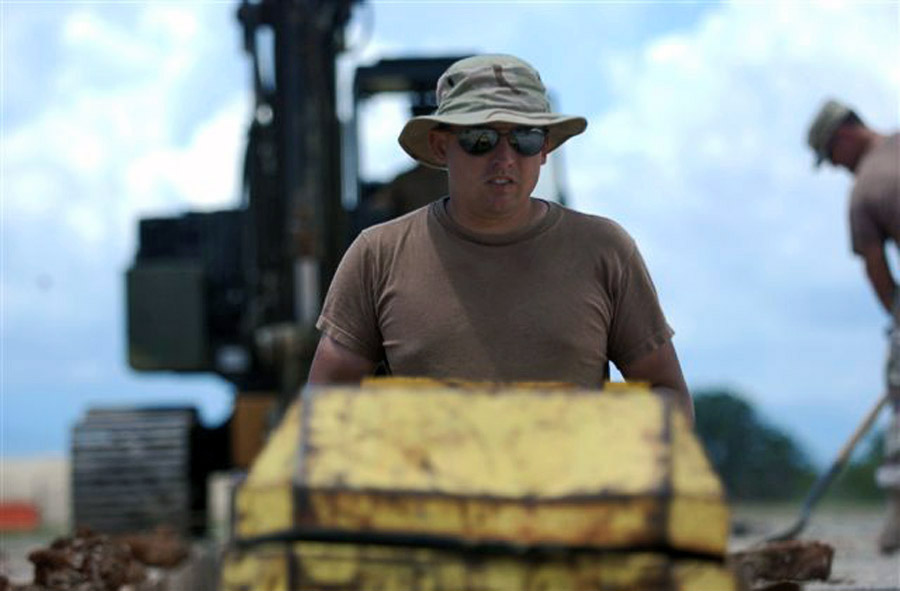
Prime BEEF stamps hoof prints on Gitmo

Airmen from the 474th Expeditionary Civil Engineer Squadron work on the foundation for the new commissions complex Sept. 18. The unit broke ground Sept. 11 on the construction of the new expeditionary legal complex where military commissions will resume pending court review. JTF-GTMO conducts safe and humane care and custody of detained enemy combatants. The JTF conducts interrogation operations to collect strategic intelligence in support of the war on terrorism and supports law enforcement and war crimes investigations. JTF-GTMO is committed to the safety and security of American servicemembers and civilians working inside its detention facilities.